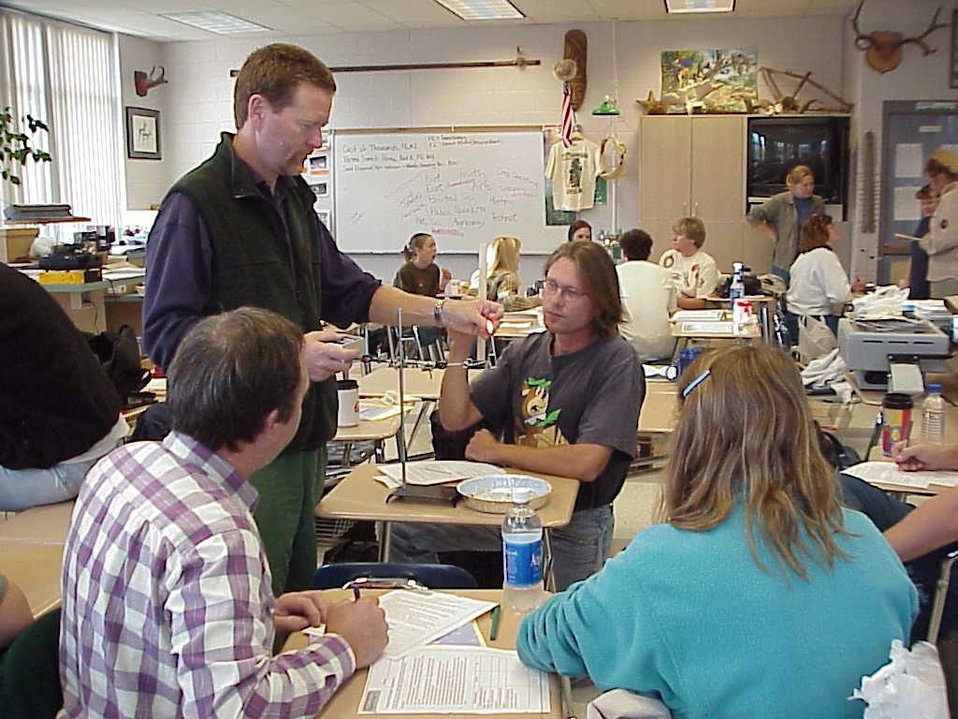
Environmental Education Fire Workshop Timberline High School Fall 2000